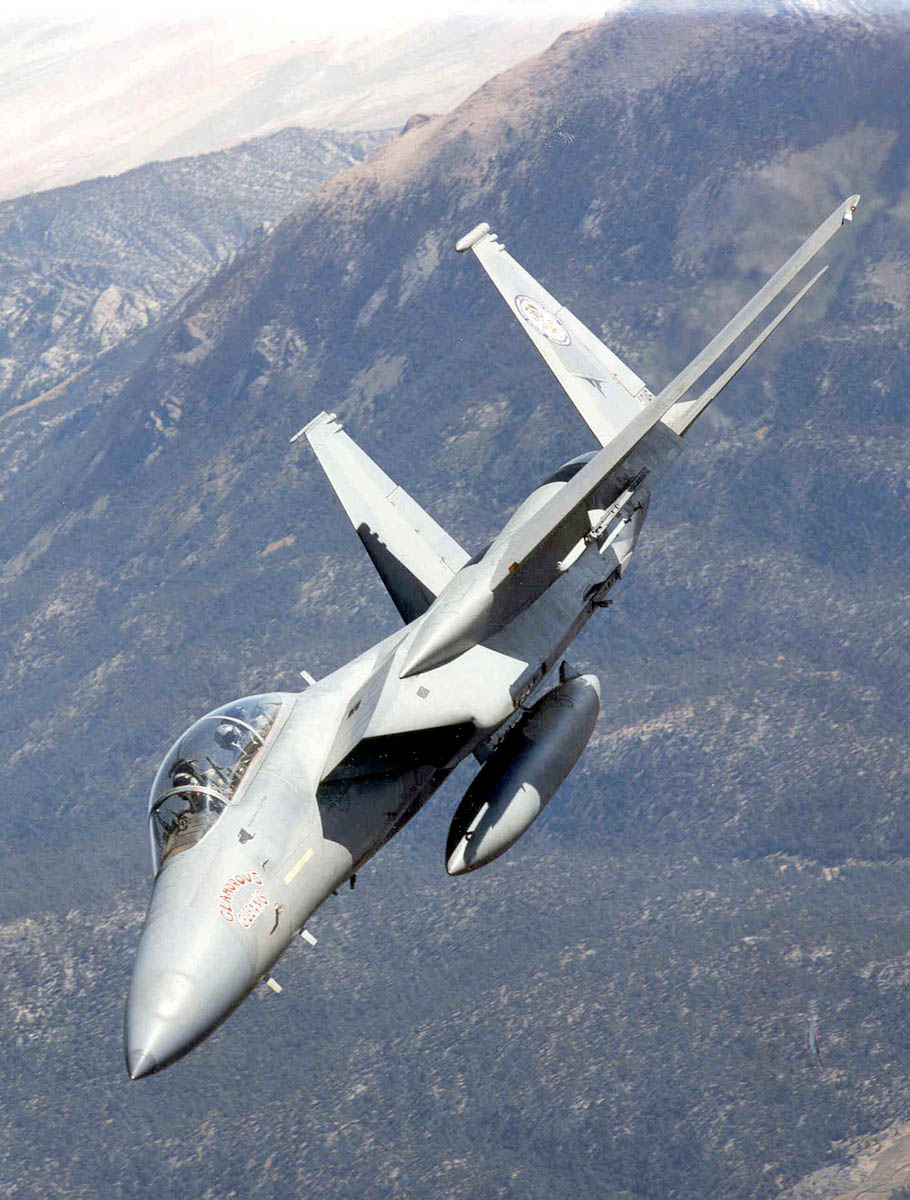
Bank right

EDWARDS AIR FORCE BASE, Calif. -- An F-15 Eagle from the 445th Flight Test Squadron here banks over mountains in the Sequoia National Forest. The F-15 was flying as a chase aircraft during recent B-1B bomber tests. Throughout the years, Edwards has evaluated the world's current premier air superiority fighter for engine enhancements, radar improvements and weapons additions.